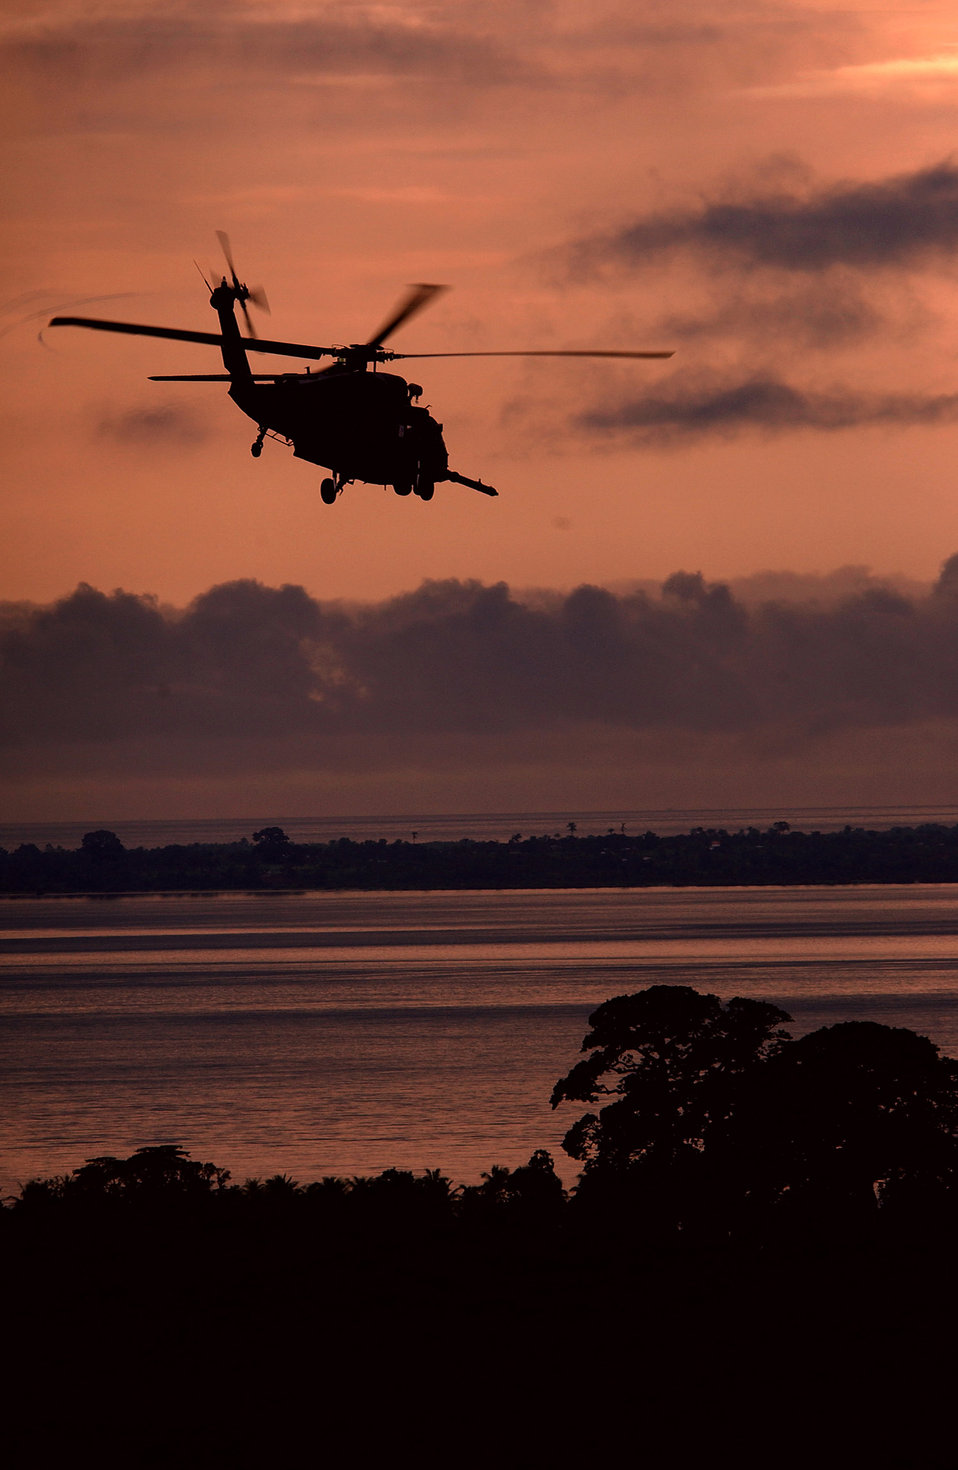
Mission accomplished, returning to base

OVER WEST AFRICA -- An HH-60G Pave Hawk helicopter flies back to Sierra Leone after an evacuation mission into the U.S. Embassy in Monrovia, Liberia, on July 28. The 398th Air Expeditionary Group is currently in Sierra Leone to provide personnel recovery and emergency evacuation capability for the humanitarian assistance survey team and the fleet antiterrorism security team in Liberia. The HH-60G is deployed from the 56th Rescue Squadron at Naval Air Station Keflavik, Iceland.